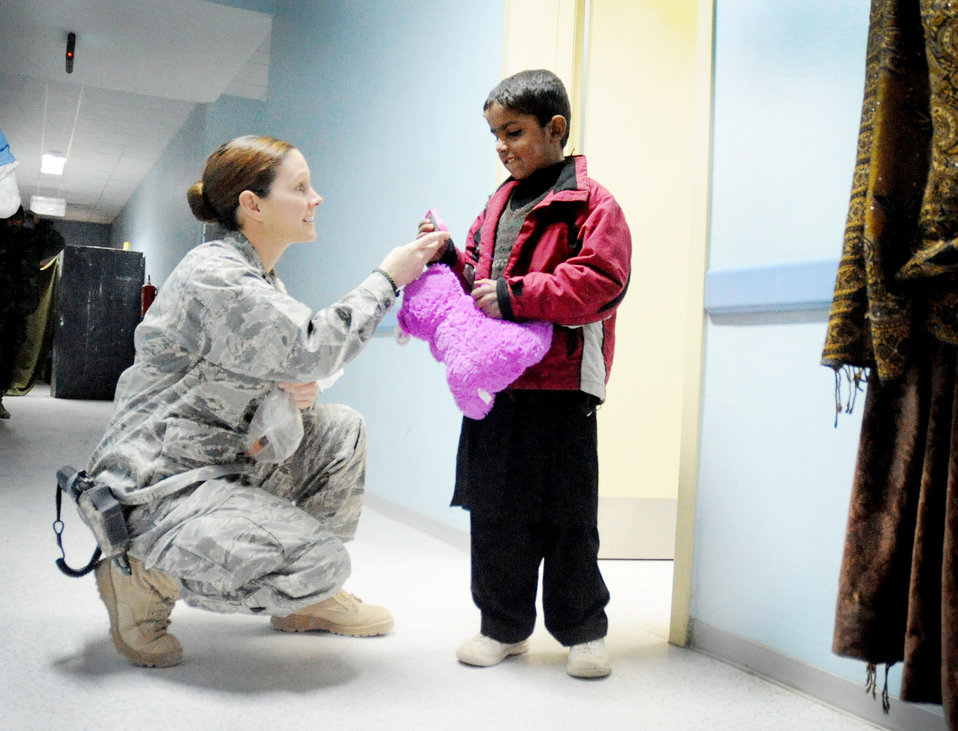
Women's and Childrens Clinic

Capt. Tess Marcial hands a toy animal and candies to an Afghan child visiting the Paktya Regional Military Hospital Dec. 14, 2009, at Paktya Province, Afghanistan. The program member's goal is to provide Afghan National Security Forces families with medication, prescriptions, immunizations and health education. Captain Marcial is a Logistics and Patient Administrator.